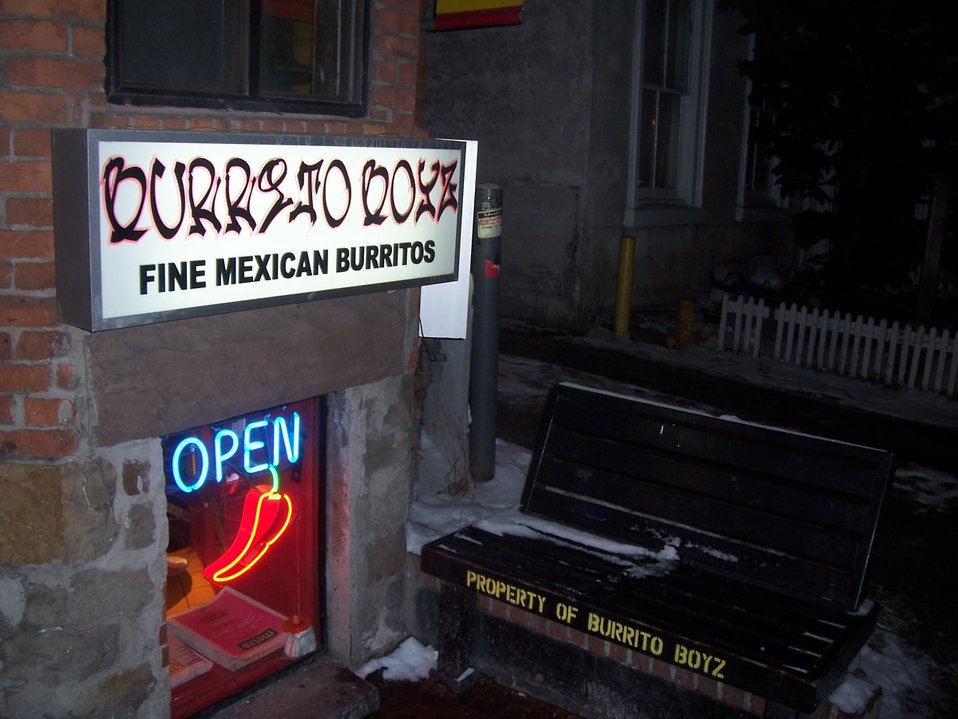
An outside shot of the original Burrito Boyz